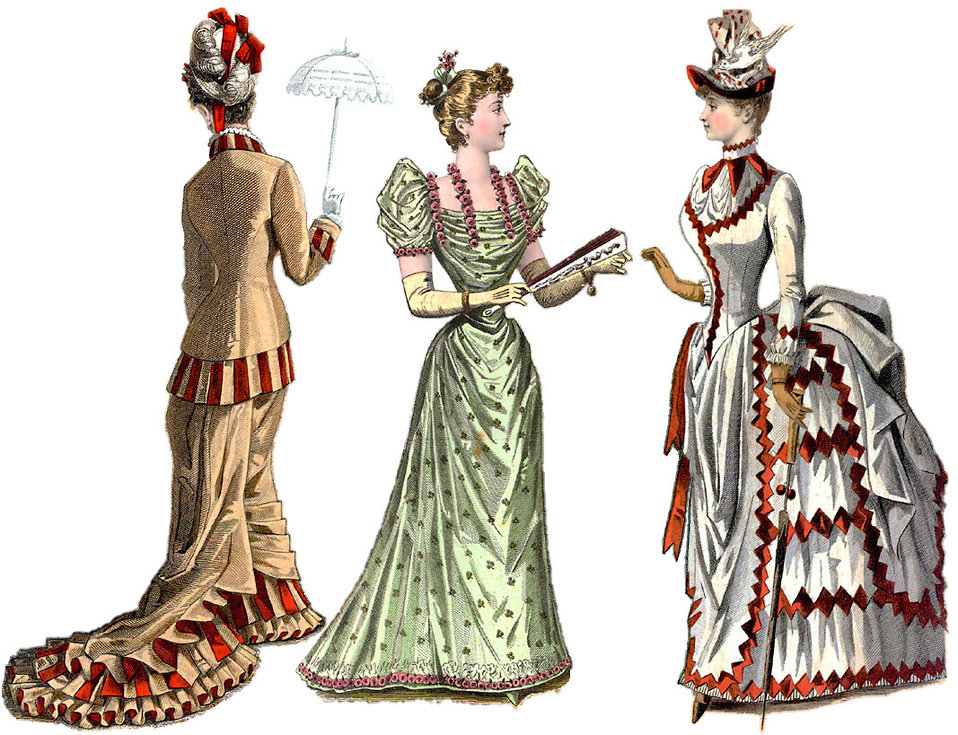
1880s-fashions-overview